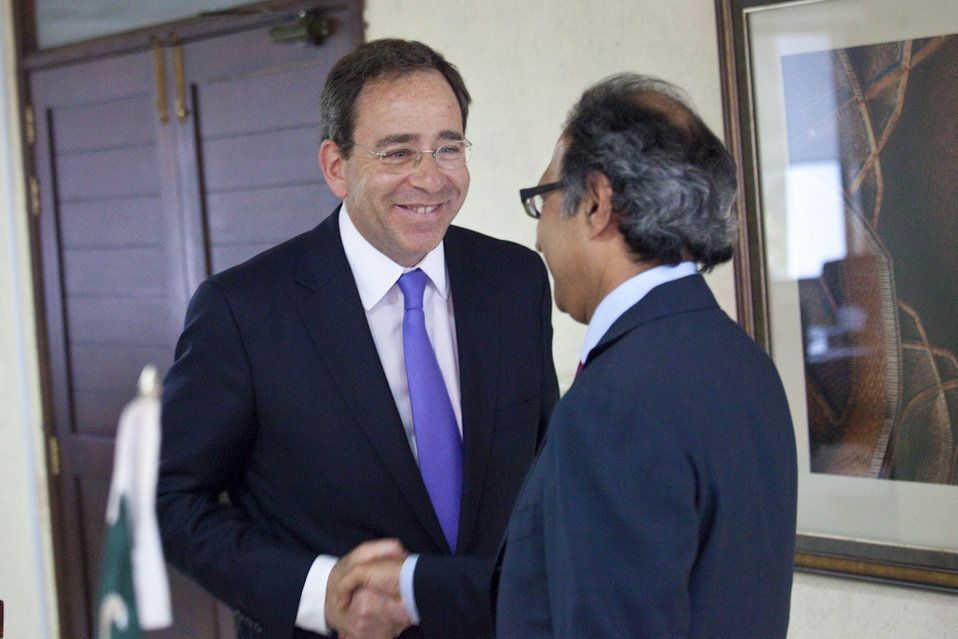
Deputy Secretary Nides Meets With Pakistani Finance Minister Shaikh

U.S. Deputy Secretary of State Thomas Nides meets with Pakistani Finance Minister Hafeez Shaikh in Islamabad, Pakistan, on April 4, 2012.